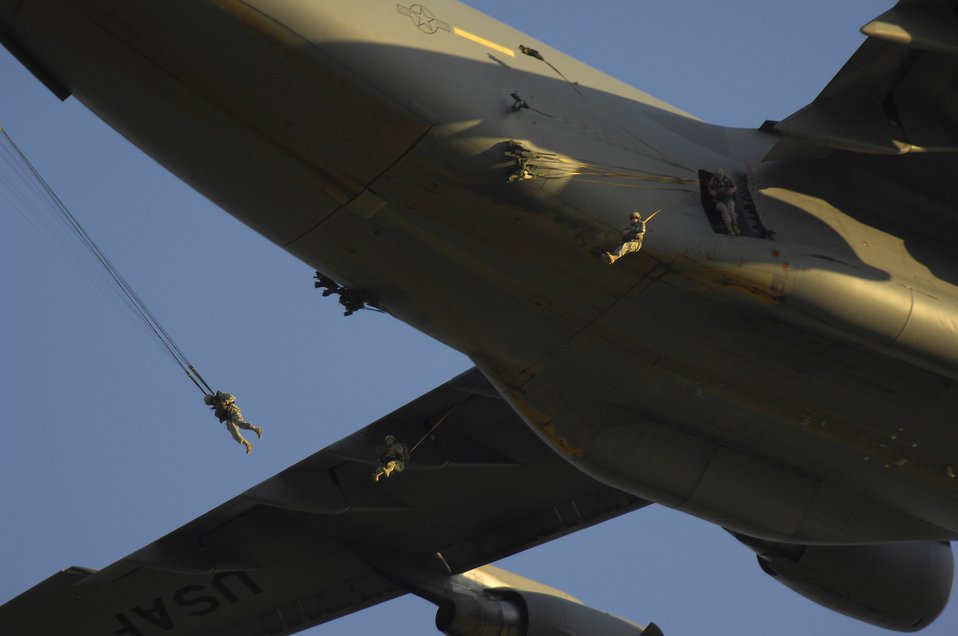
Here I come!

Paratroopers from the 82nd Airborne Division jump from a C-17 Globemaster III during a joint exercise June 18 at Fort Bragg, N.C. The exercise enhances cohesiveness between services, allowing an opportunity to move large-scale heavy equipment and troops.